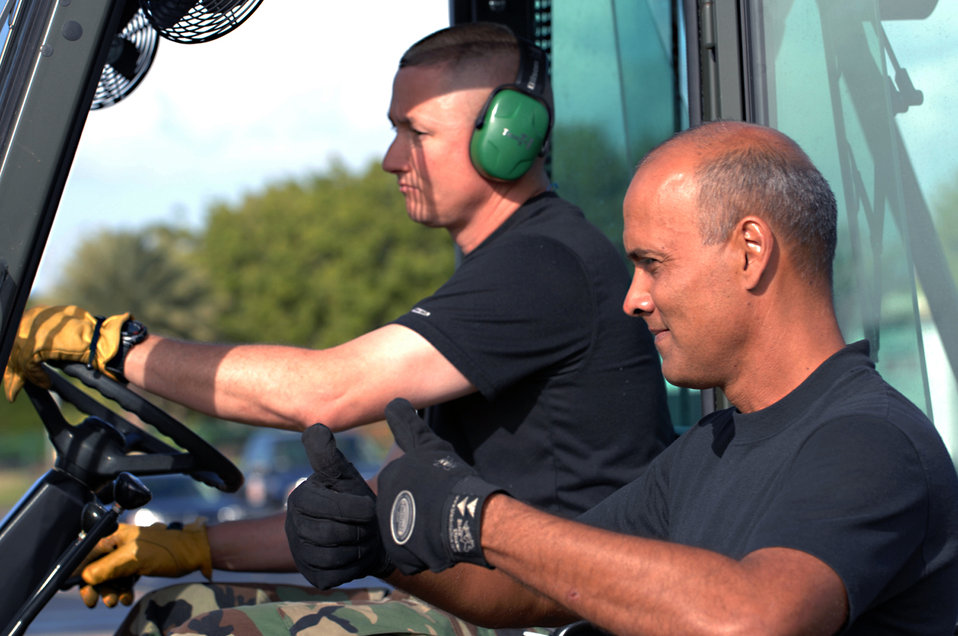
PACIFIC LIFELINE '08

Tech. Sgt. Jay Perez guides Staff Sgt. Joe Pruitt Jan. 29 as he loads a pallet container of Meal Ready to Eat packages at Hickam Air Force Base, Hawaii. Sergeant Perez is part of the 44th Aerial Port Squadron at Andersen AFB, Guam, and Sergeant Pruitt is a reservist with the 73rd APS based out of the Naval Air Station Joint Reserve Base in Carswell, Texas. Pacific Lifeline is a total force exercise designed to practice the military's ability to rapidly deploy a trained, equipped team anywhere in the Pacific in response to a humanitarian assistance or disaster scenario.